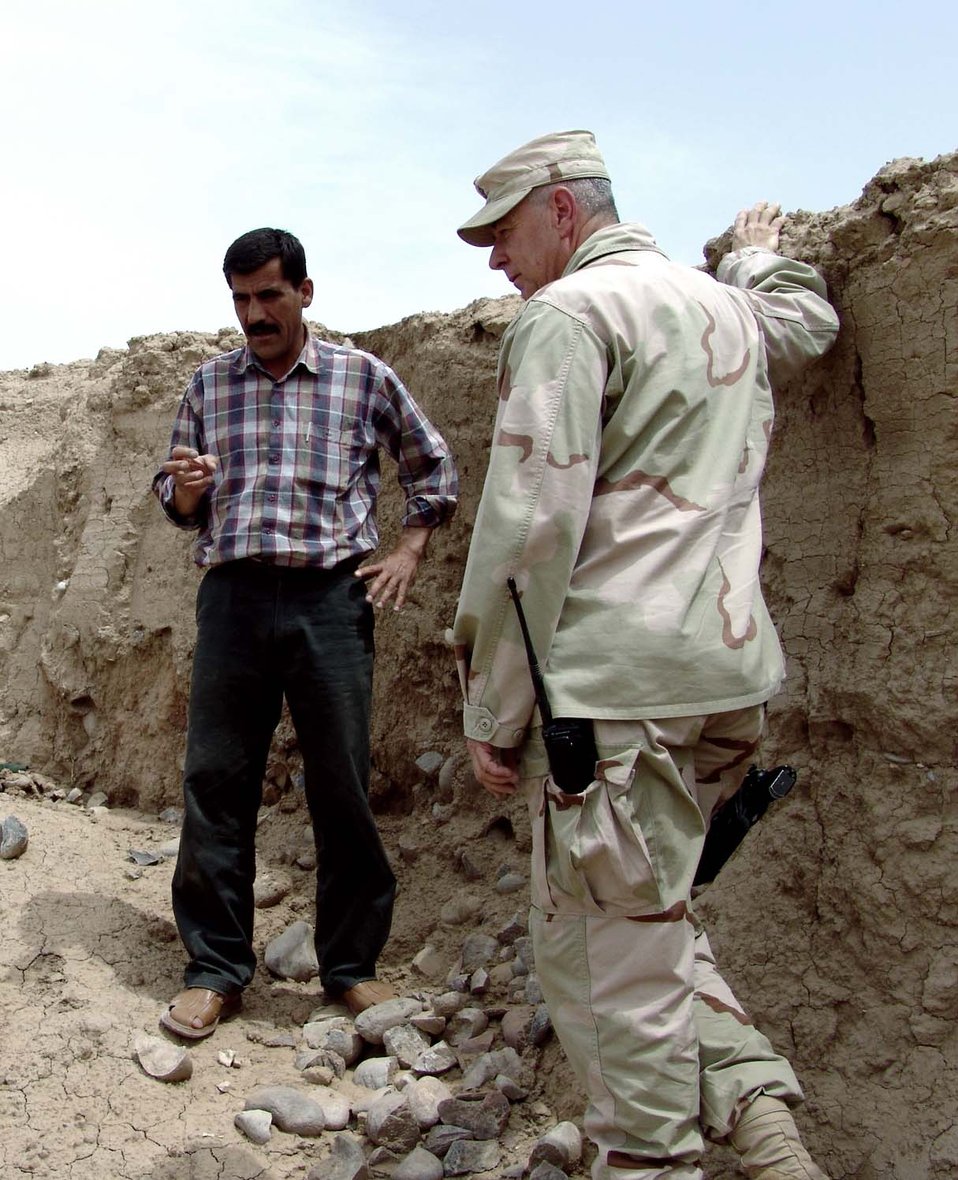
Airmen, Iraqis dig up ancient site

KIRKUK AIR BASE, Iraq -- Maj. Mike Larkin talks with Sheida Muhammad Amin at a recently discovered archeological site here. Major Larkin is the 506th Expeditionary Security Forces Squadron commander, and Mr. Amin is an archeological surveyor for the Kirkuk's department of antiquities.